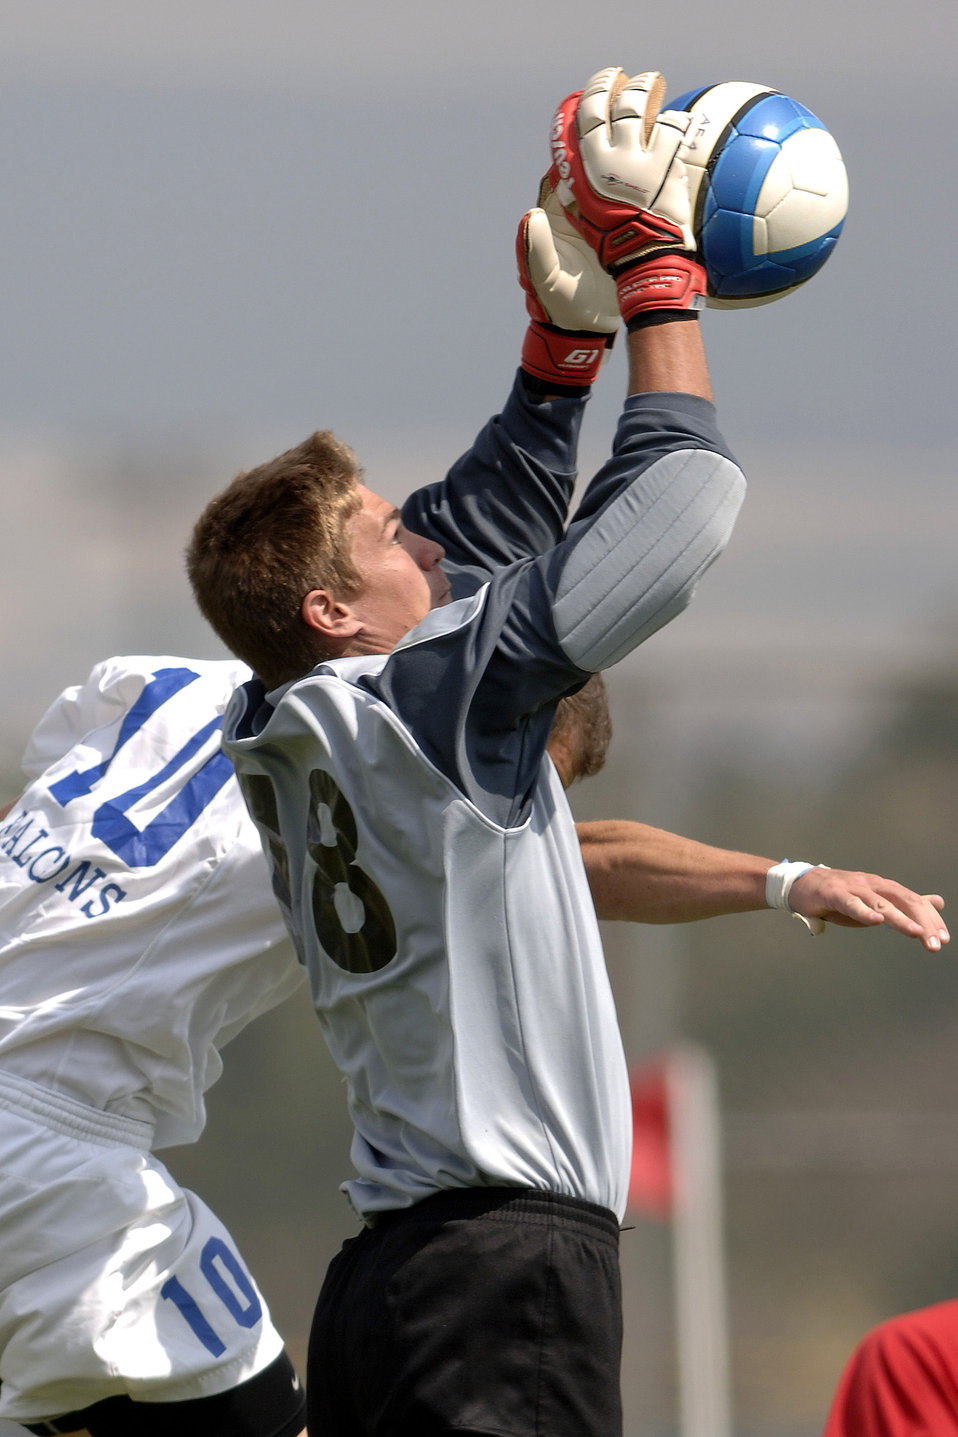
Falcons shut out St. Francis in soccer action

Senior goalkeeper Brian Guyette makes a save during the Air Force 1-0 win over St. Francis University Sept. 9 at the U.S. Air Force Academy Cadet Soccer Stadium in Colorado Springs, Colo. Guyette posted his second consecutive shutout and has a scoreless streak of 218 minutes and 16 seconds. With the victory, Air Force improved to 2-2 this season, while St. Francis fell to 1-3.